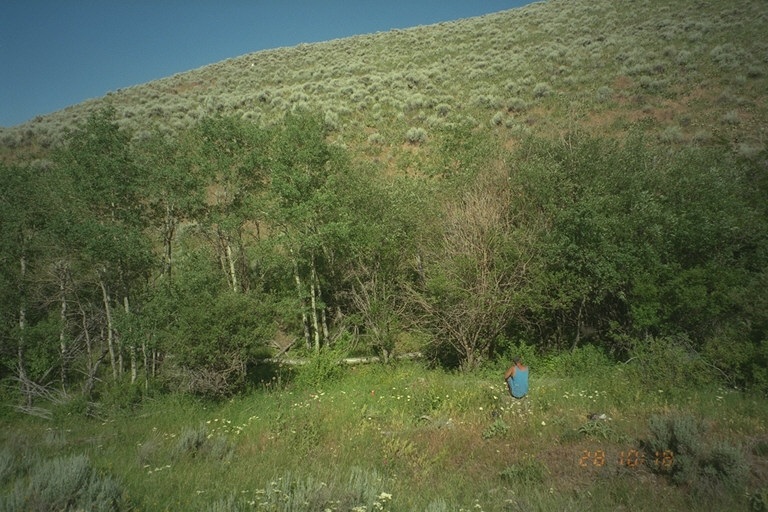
Riparian area Public Lands Salmon Field Office UCSC Upper Columbia Salmon Clearwater District